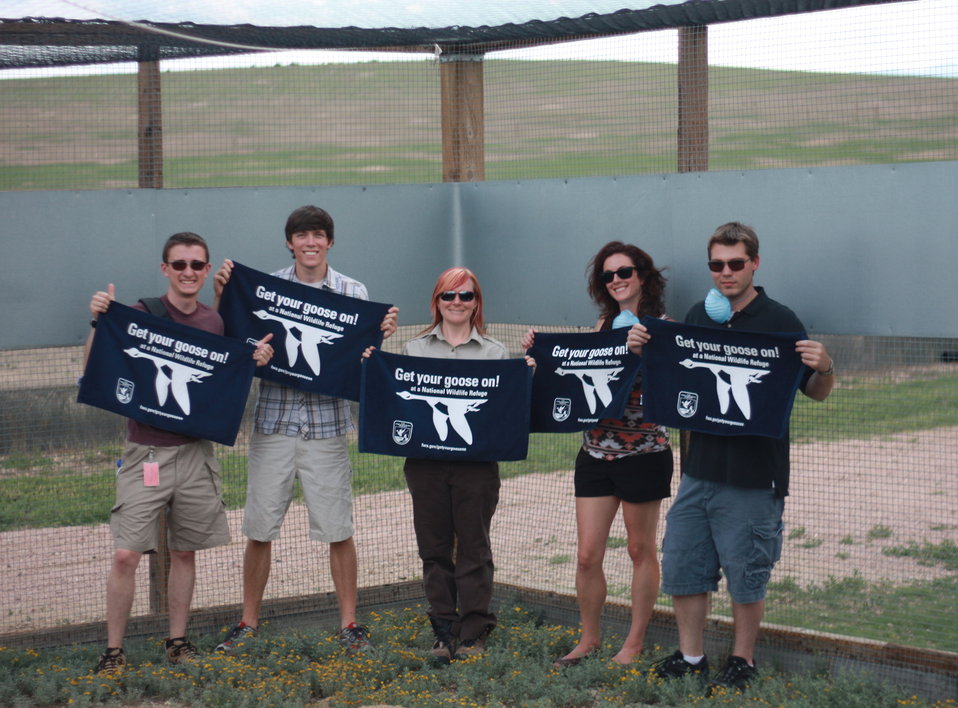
Interns visit the NBFFCC

In the summer of 2012, USFWS Region 6 interns visited the National Black-footed Ferret Conservation Center (NBFFCC) in Colorado to learn how the program reintroduces the endangered Black-footed ferret back into its native habitat.

Here, the region 6 summer interns 'Get their Goose on' at the NBFFCC!